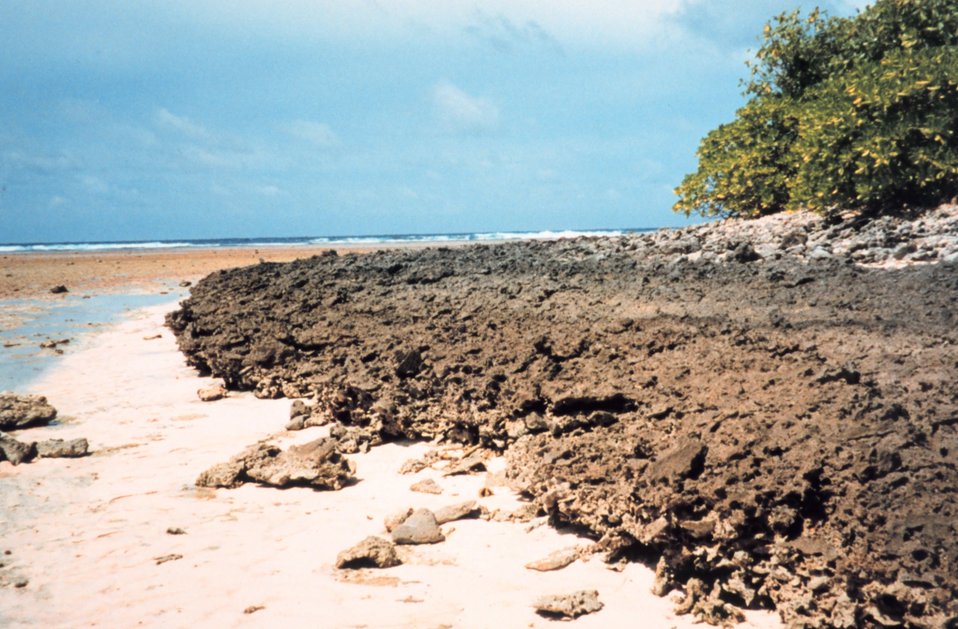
Sharp hard coral shoreline at low tide